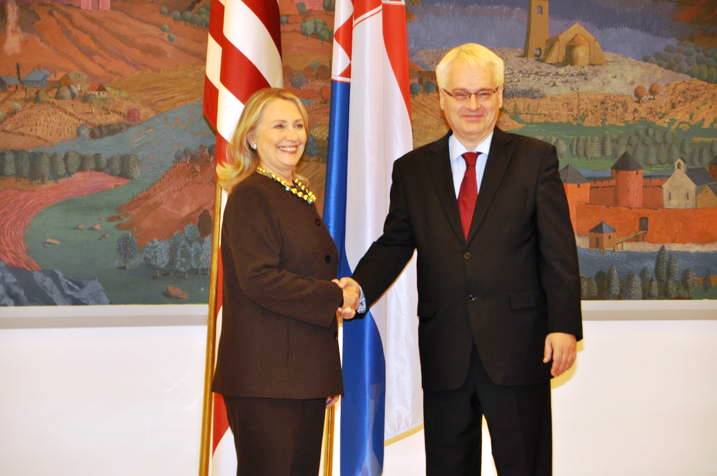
Secretary Clinton Shakes Hands With Croatian President Josipovic

U.S. Secretary of State Hillary Rodham Clinton and Croatian President Josipovic shake hands before their meeting in Zagreb, Croatia, October 31, 2012.